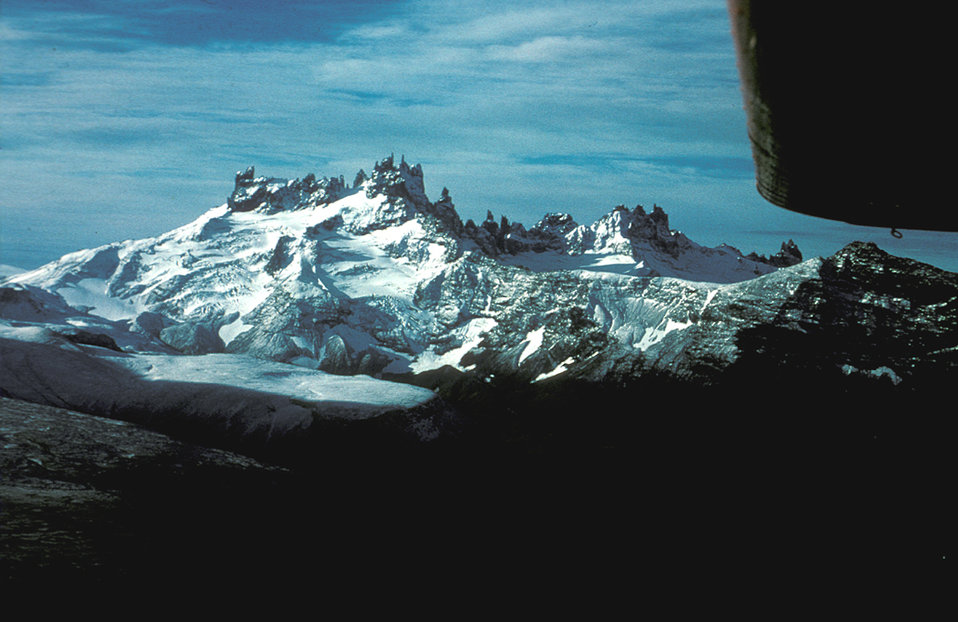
Aghileen Pinnacles, Alaska Peninsula

Aerial view of the Aghileen Pinnacles, Alaska Peninsula.